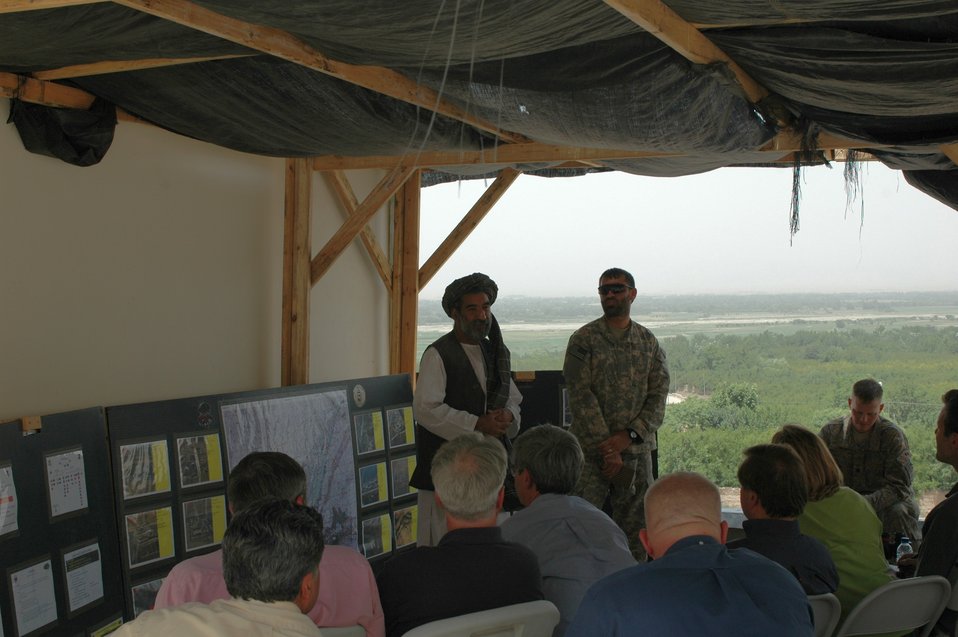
CODEL Berman